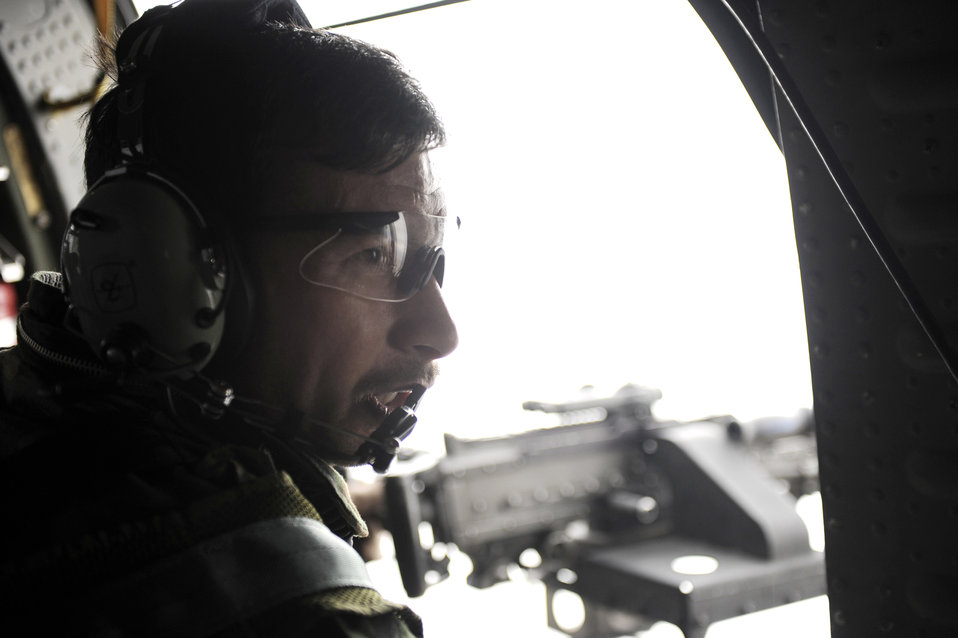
Joint team leads crew chief academy

Afghan National Army Air Corps Sgt. M-Yousaf Wafa practices skills he learned at the Afghan National Security Forces Crew Chief Academy, during a flight on a UH-60 Blackhawk, Feb. 28, 2010, over Parwan Province, Afghanistan. Sergeant Wafa is a crew chief.